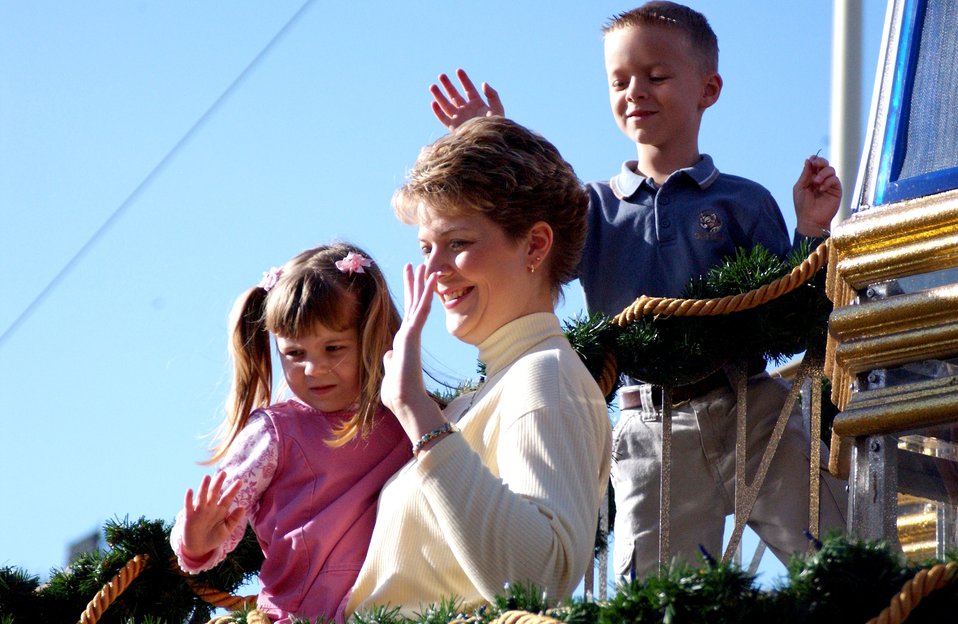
Military families ride in Disney Christmas parade

ORLANDO, Fla. -- Lisa Costin holds her daughter, Samantha, and waves as they and her son, Dustin, are greeted by the crowd around a military appreciation float at Walt Disney World. Mrs. Costin's husband is a Sailor on the USS Kennedy, and has been deployed to and around the Persian Gulf since June.